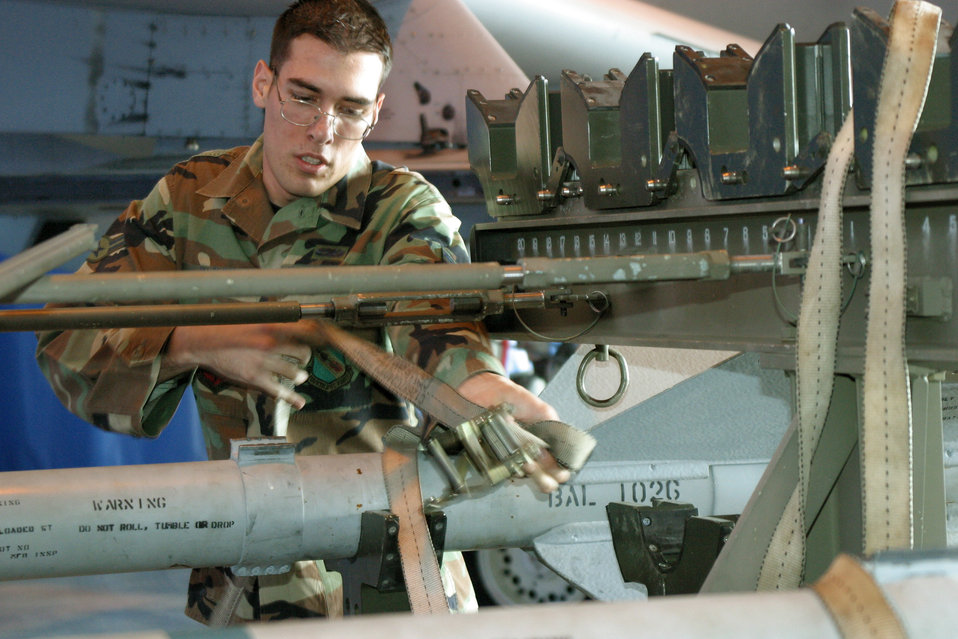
Arms up!

POPE AIR FORCE BASE, N.C. -- Airman 1st Class Christopher Blood prepares to load an AIM-9L Sidewinder missile during the annual load crew competition here Dec. 10. He is assigned to the 23rd Aircraft Maintenance Squadron.